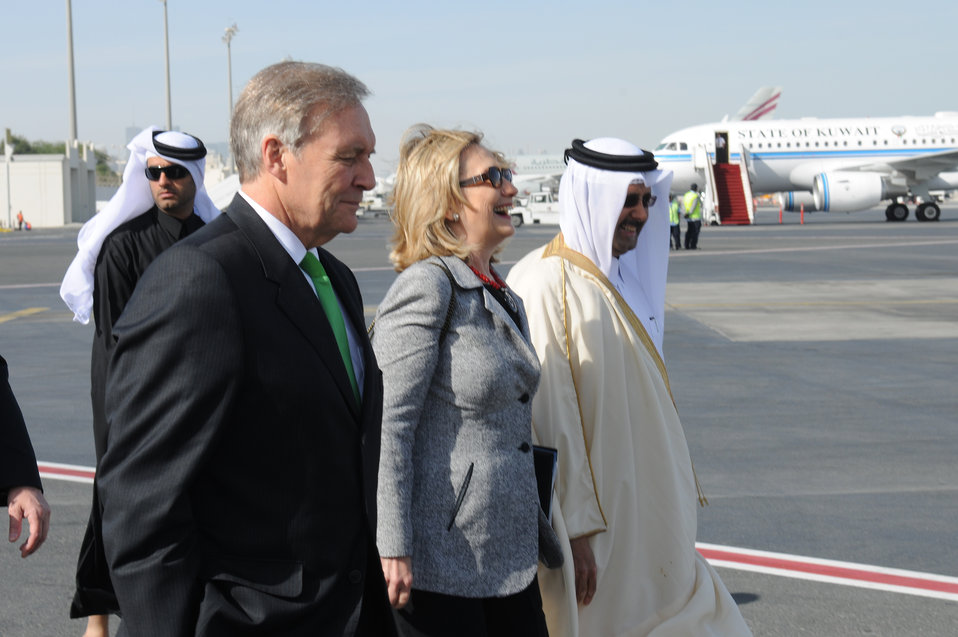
Secretary Clinton, Ambassador LeBaron, and Qatari Ambassador to the U.S. Ali Bin Fahad al-Hajri Speak as They Walk to the Plane

U.S. Secretary of State Hillary Rodham Clinton, U.S. Ambassador to Qatar Joseph Evan LeBaron, right of the Secretary, and Qatari Ambassador to the United States Ali Bin Fahad al-Hajri, left of the Secretary, laugh as they walk towards Secretary Clinton’s aircraft at Doha International Airport in Doha, Qatar, on January 13, 2010.